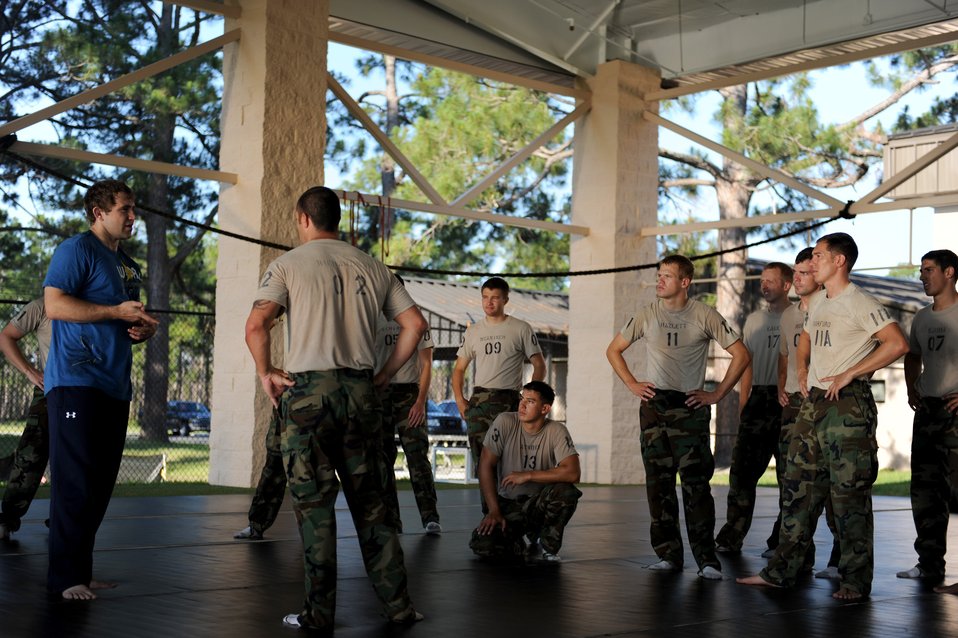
UFC fighter helps train battlefield Airmen

Airmen from the Special Tactics Training Squadron receive a combative class taught by Ultimate Fighting Championship Middleweight Alan Belcher June 8, 2010, at Hurlburt Field, Fla. The training prepared Airmen for hand-to-hand combat in the field.